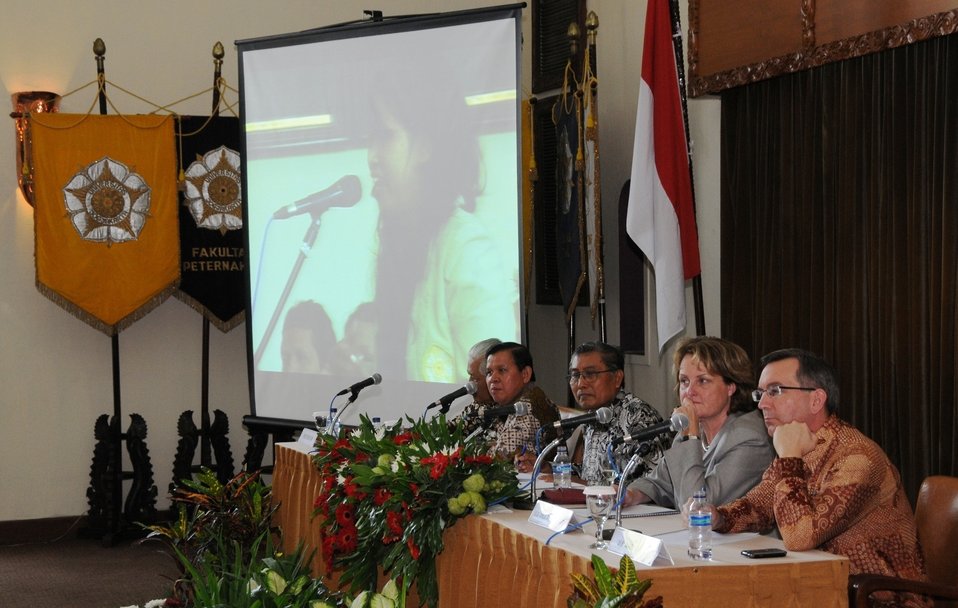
Under Secretary McHale Speaks With UGM Students

Under Secretary of State Judith A. McHale participates in a panel discussion on Entrepreneurial Education with 200 students at Gadjah Mada University (UGM) in Yogyakarta, Indonesia, on December 3, 2010.